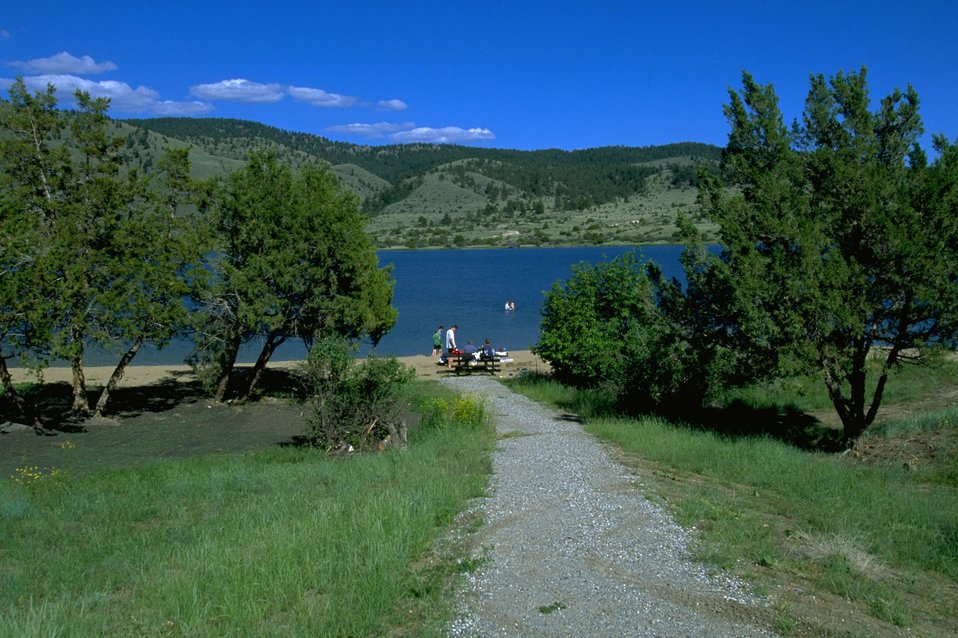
Pathway to the picnic area by Hauser Lake